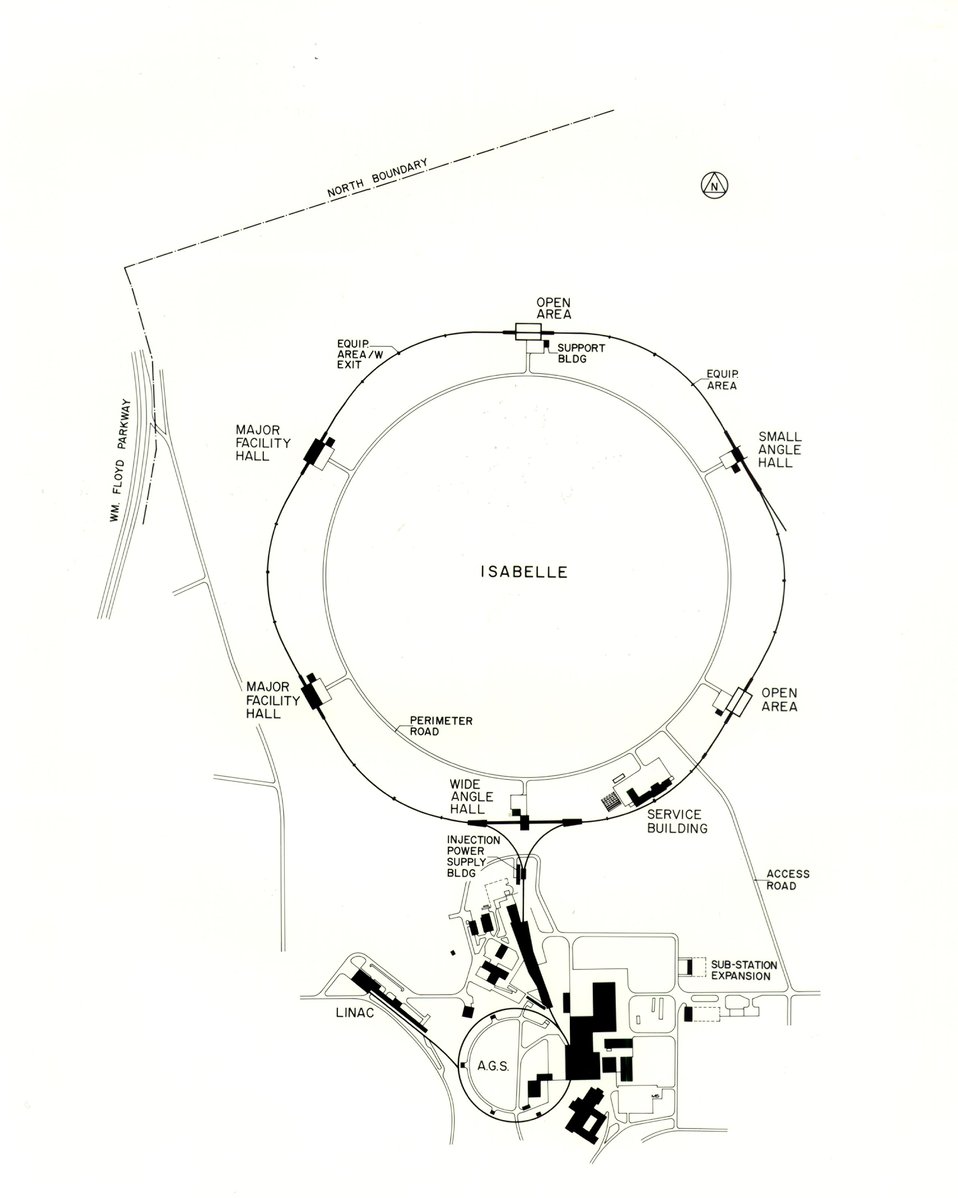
CBA IS A PROTON-PROTON COLLIDING BEAM ACCELERATOR BEING BUILT TO STUDY BASIC STRUCTURE OF ENERGY AND MATTER. THE FACILITY ITSELF IS AN UNDERGROUND CIRCULAR TUNNEL 3.8 KILOMETERS IN CIRCUMFERENCE. TWO RINGS OF SUPERCONDUCTING MAGNETS WILL BE INSIDE THE TUNNEL. PROTON BEAMS WILL BE INJECTED INTO THE TUNNEL AND ACCELERATED TO ENERGIES UP TO 400 GEV. AT SIX PLACES ALONG THE TUNNEL, THE BEAMS WILL COLLIDE. EXPERIMENTAL HALLS, DESIGNATED BY THEIR 'HAND OF CLOCK' POSITION AROUND THE RING, ENCLOSE THESE SIX INTERSECTIONS AND WILL HOUSE EQUIPMENT FOR STUDYING THE RESULTS OF THE COLLISIONS.